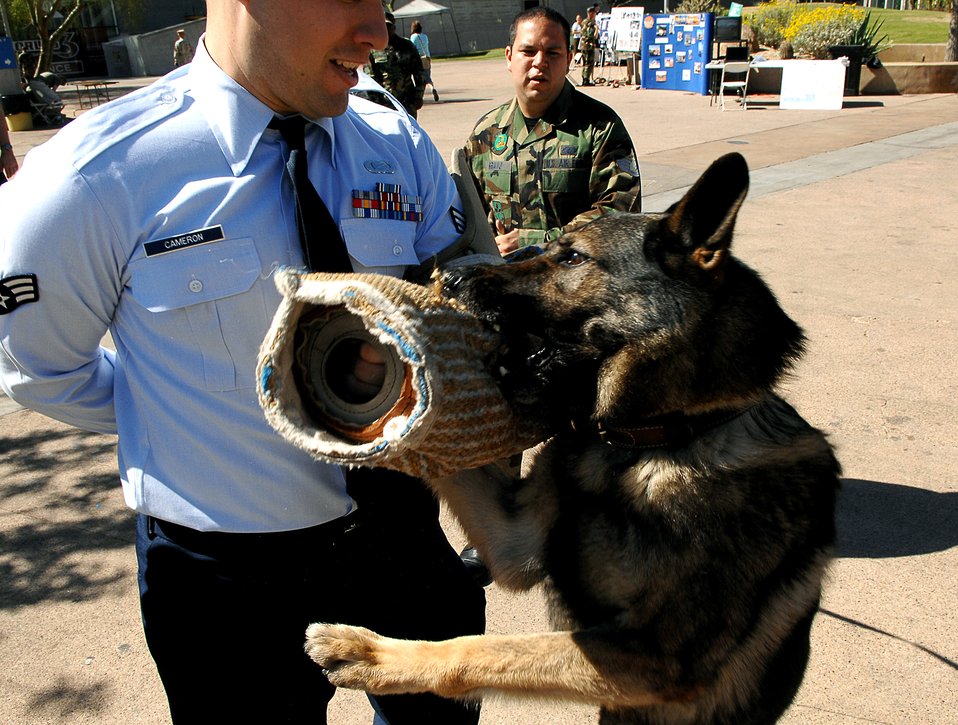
Air Force Week displays highlight airpower

Senior Airman Brad Cameron catches a security forces working dog March 20 during an Air Force Week event at the Arizona Science Center in downtown Phoenix. The dogs were on hand to show visitors the role of dog handlers in the Air Force.